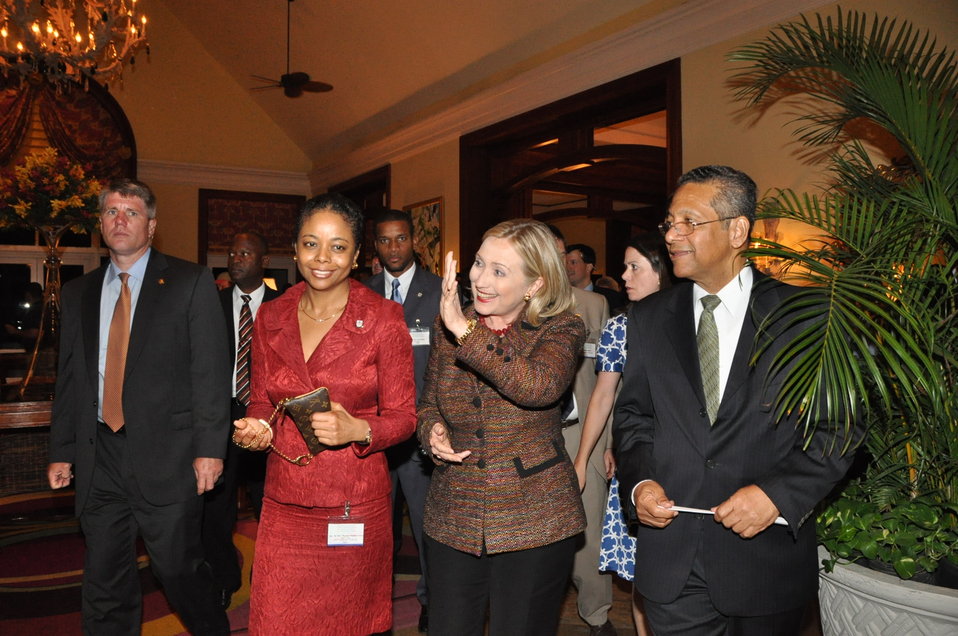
Secretary Clinton Attends a Reception for CARICOM Ministers

U.S. Secretary of State Hillary Rodham Clinton attends a a reception for Caribbean Community (CARICOM) foreign ministers in Montego Bay, Jamaica, on June 22, 2011. Jamaican Foreign Minister Kenneth Baugh is pictured on the right.